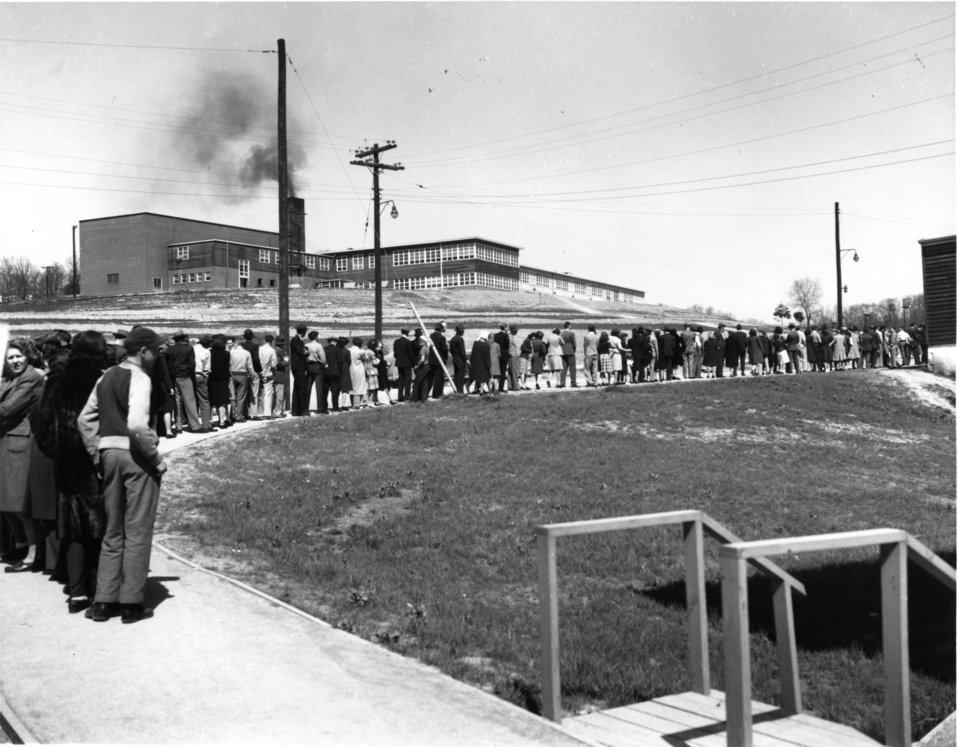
Daily Life at Oak Ridge